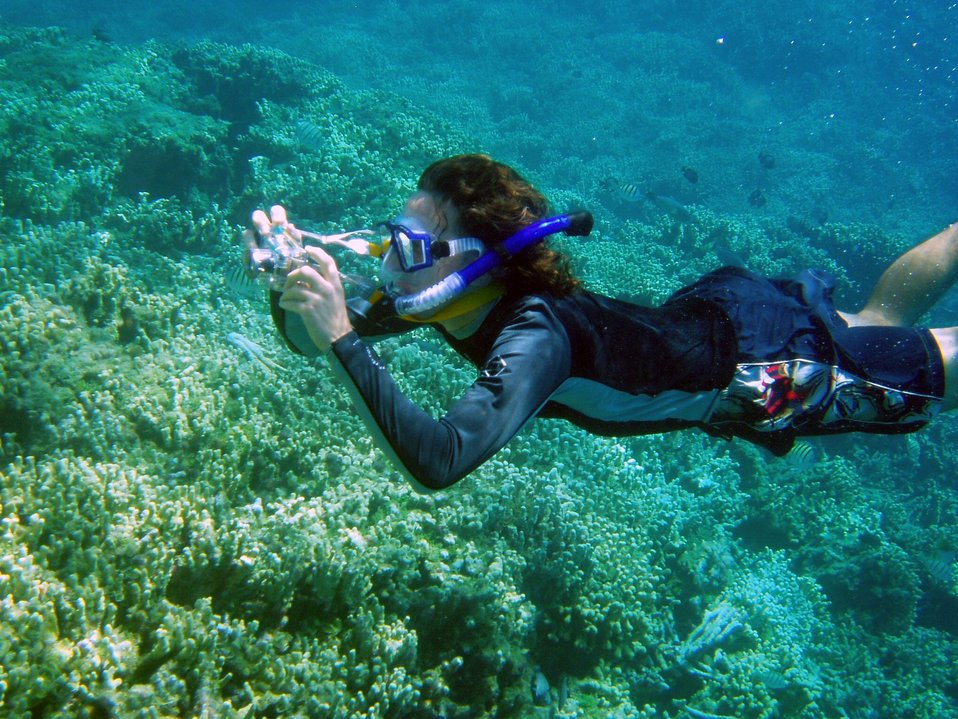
Paulo Maurin photographing reef vistas while snorkeling.